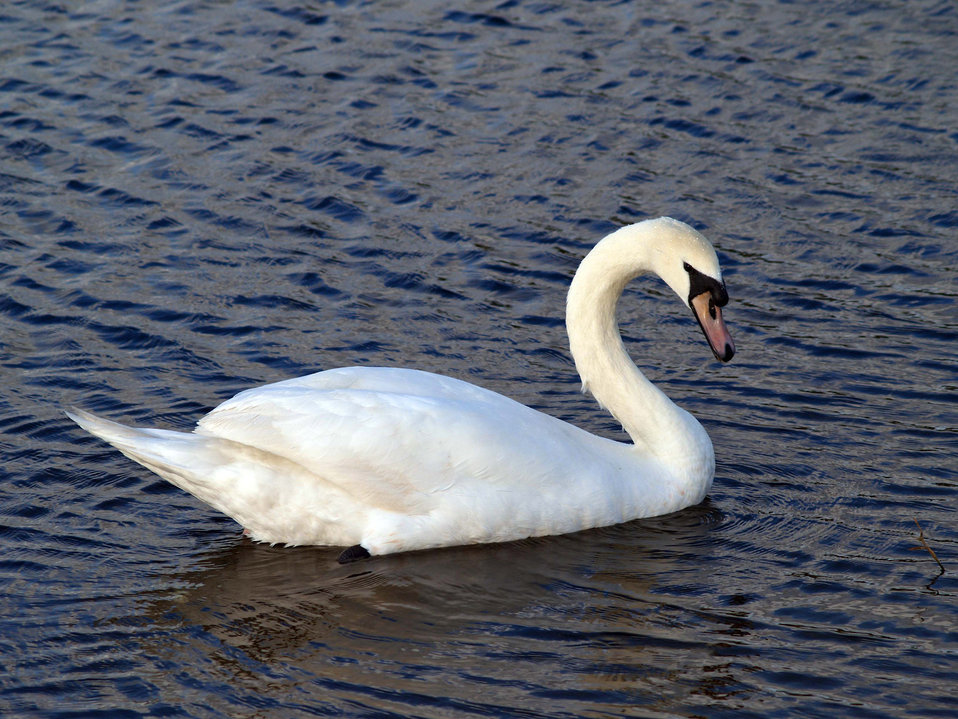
Mama swan

Mother swan swimming in lake.